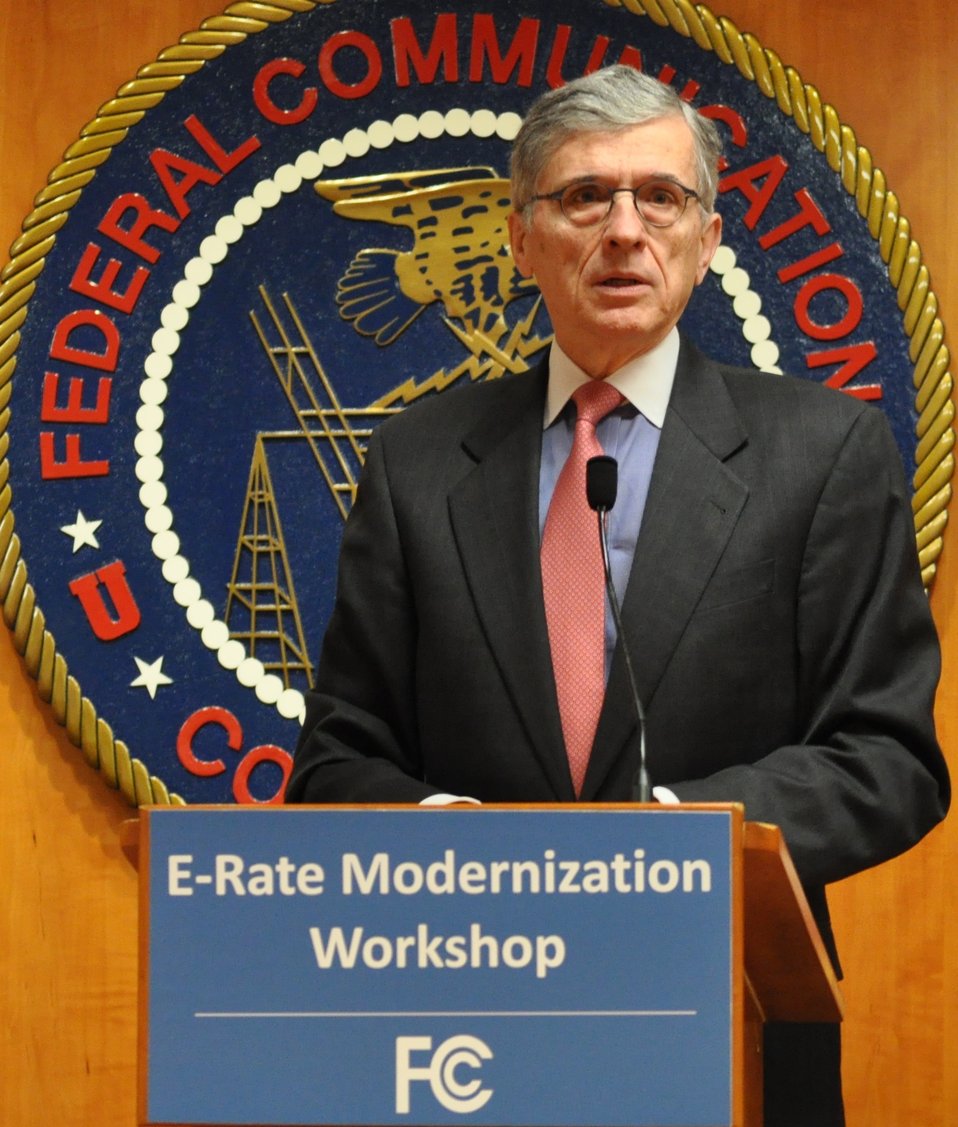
5.6.2014 E-Rate Modernization Workshop

Welcome and Opening Remarks from Chairman Tom Wheeler